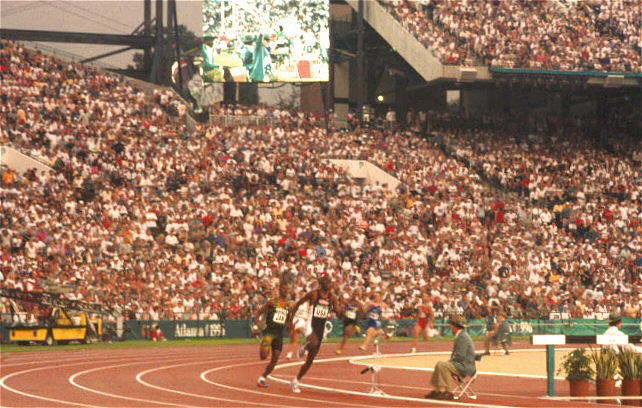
1996 Atlanta Olympics--track and field, men's 4x400m relay.